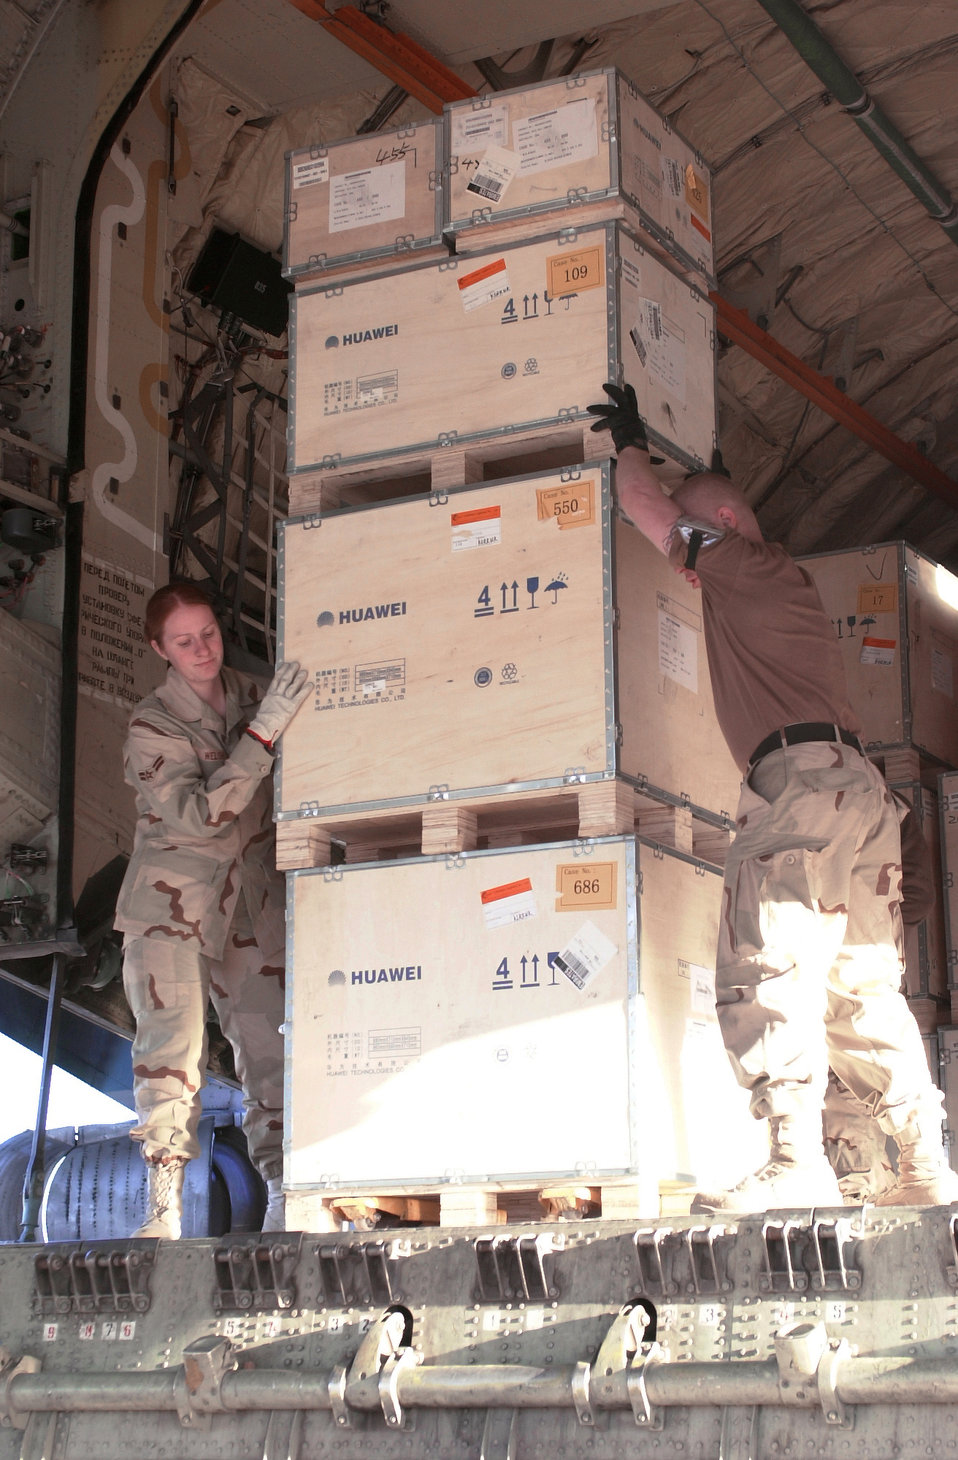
A tall order

KIRKUK, Iraq -- Airmen 1st Class David Strudgeon and Jenna Welsh, both members of the 506th Expeditionary Logistics Readiness Squadron, offload crates of telecommunications equipment here, Nov. 17th. The equipment will help rebuild the telecommunications infrastructure of Northern Iraq.